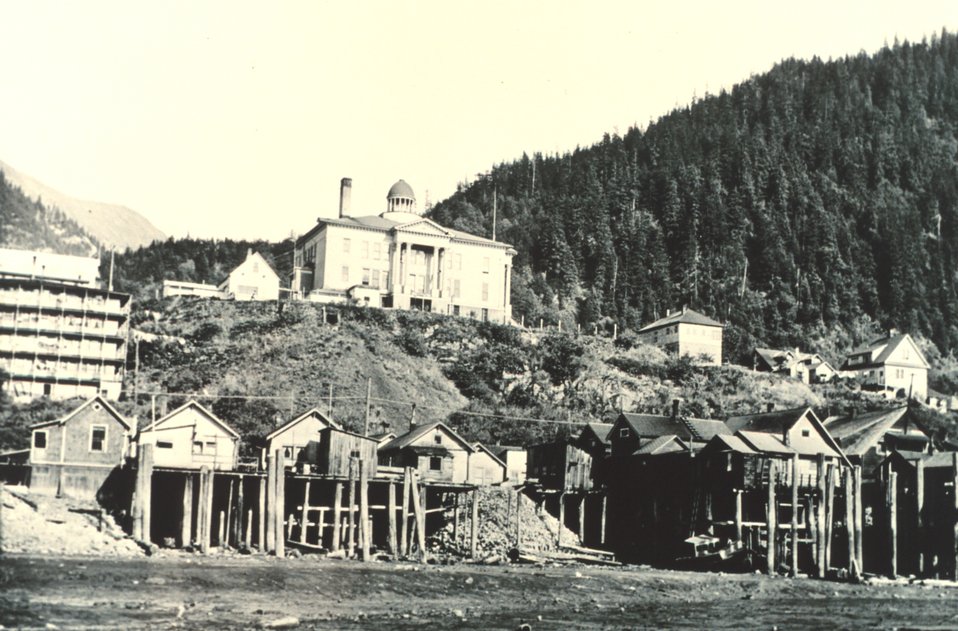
Juneau at low tide looking from seaward over the mudflats. The old Federal Building is in the left center of the photo. F&WS 3342.